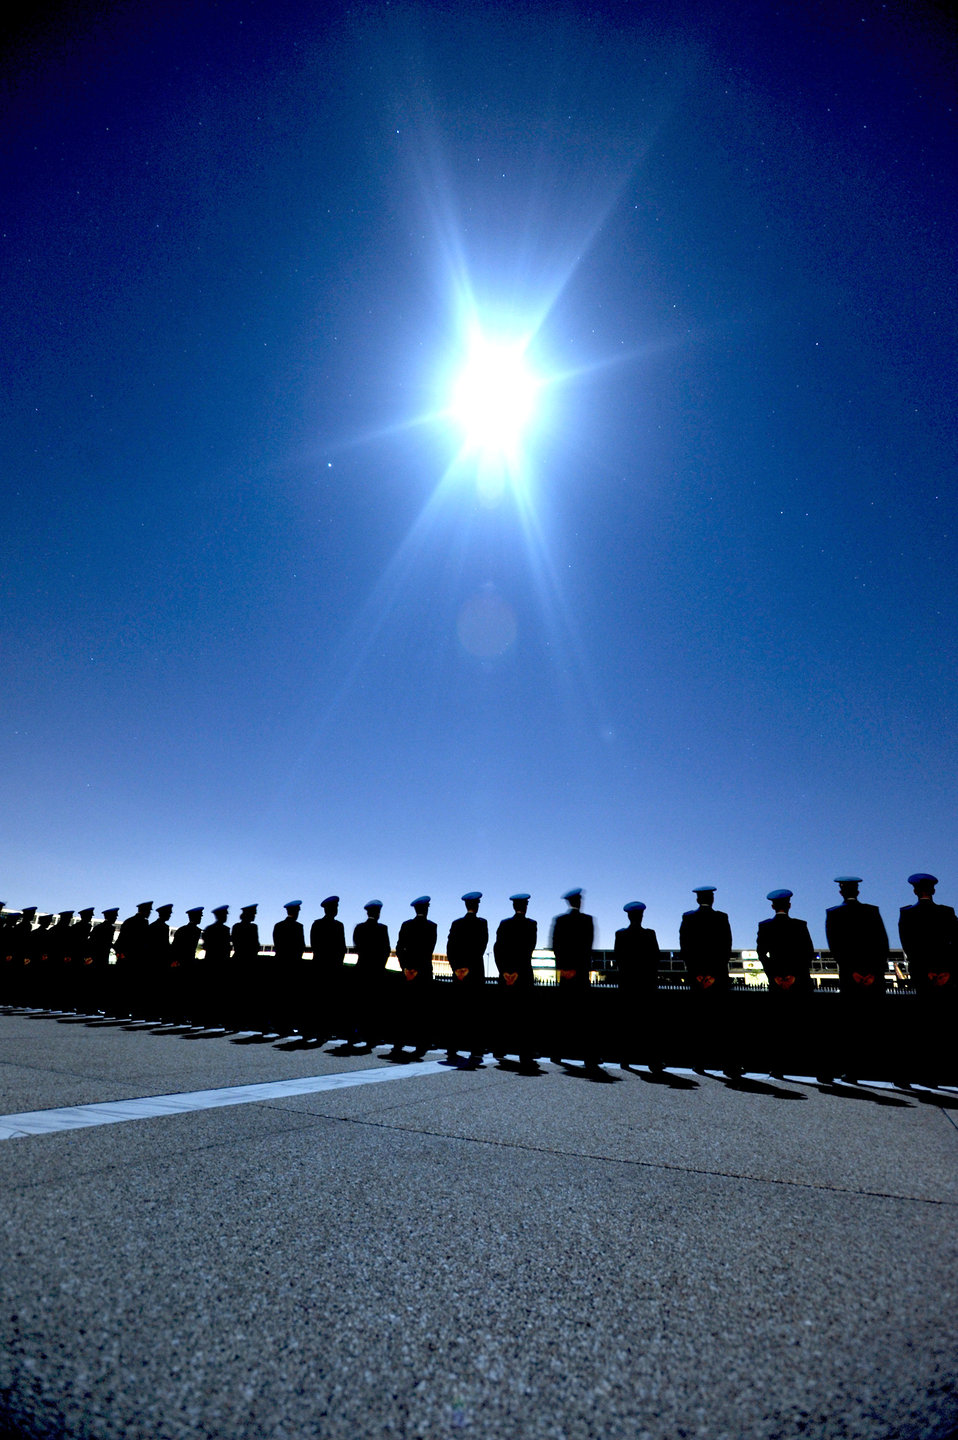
A final tribute

U.S. Air Force Academy cadets honor Cadet 1st Class Marc Henning during a 'Taps' ceremony in the Academy's Terrazzo Sept. 21, 2010, in Colorado Springs, Colo. Cadet Henning, a native of Crossville, Ill, died Sept. 17.